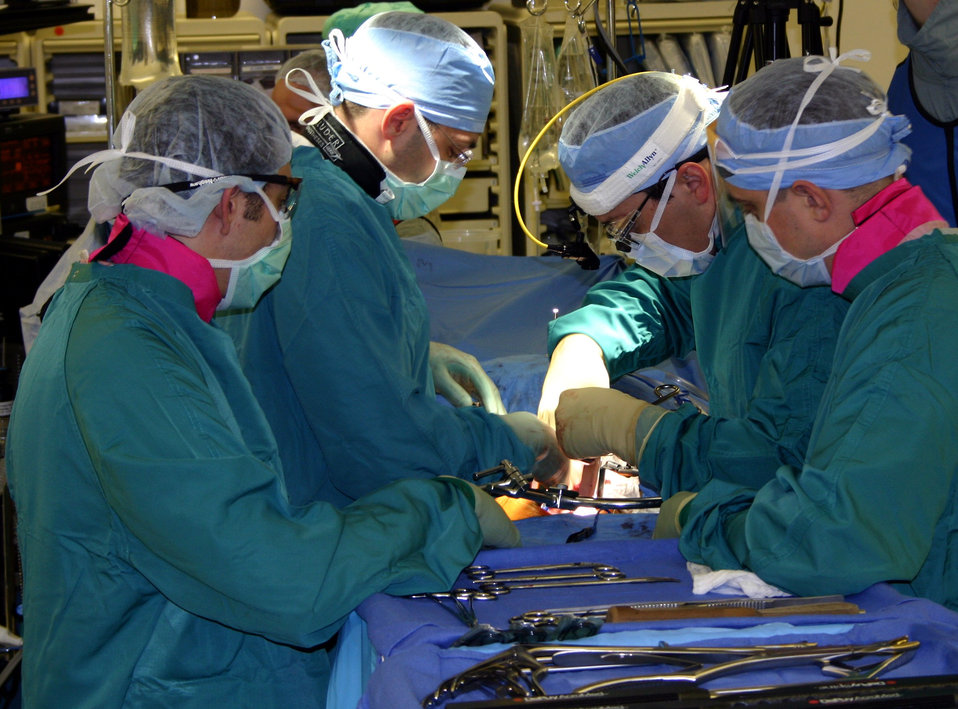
Air Force doctors perform alternative back surgery

LACKLAND AIR FORCE BASE, Texas -- Wilford Hall Medical Center's orthopedic spine surgery team here performs the Air Force's first total-disc arthoplasty procedure. During the five-hour procedure, surgeons removed and replaced a failed disc in the back of Tech. Sgt. Loren Dick with a new three-piece medical device consisting of two metal endplates of medical-grade cobalt chromium alloy and a sliding core made of medical-grade plastic. Sergeant Dick is an acquisition logistics manager from Scott Air Force Base, Ill.